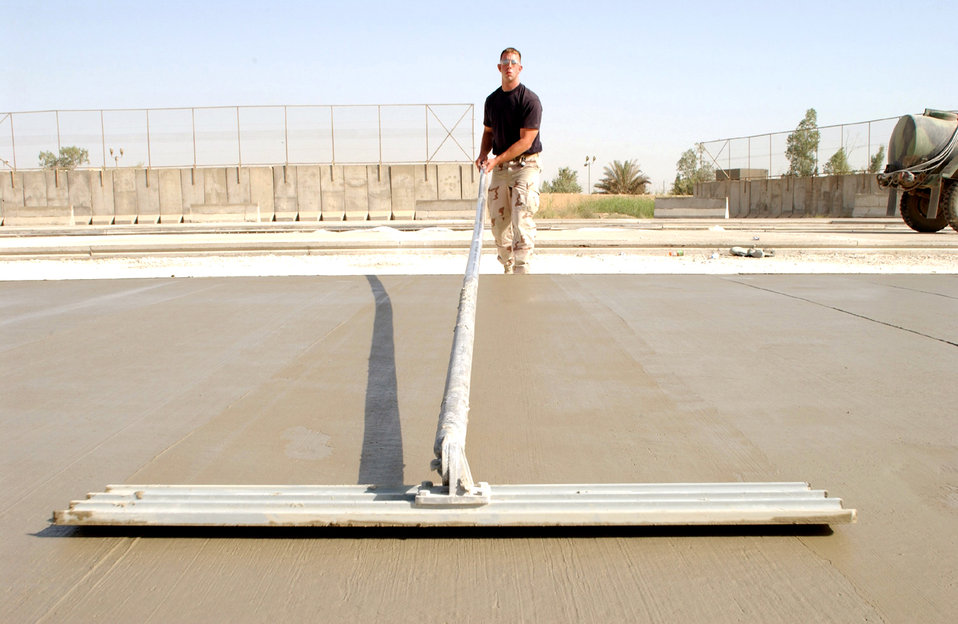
Red Horse engineers build Iraqi future

BAGHDAD, Iraq -- Staff Sgt. Jason Hanson uses a bull float to finish concrete at the main entry control point for the Baghdad International Airport complex that will be used to improve security for civilians and coalition forces. He is deployed to the 557th Expeditionary Red Horse Squadron from Schriever Air Force Base, Colo.